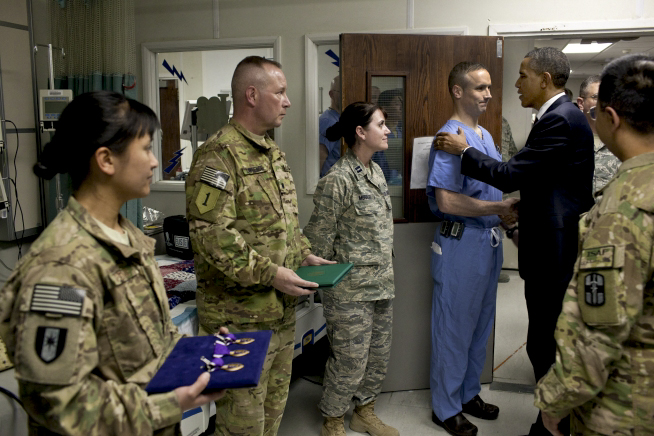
Obama makes surprise visit to Bagram Airfield

President Barack Obama greets hospital personnel in the intensive care unit at Bagram Airfield, Afghanistan, May 1, 2012. Obama presented 10 Purple Hearts, three in the ICU. The president also met with troops after announcing he had signed a strategic partnership agreement with Afghan President Hamid Karzai detailing the relationship between the U.S. and Afghanistan as the war there nears an end.